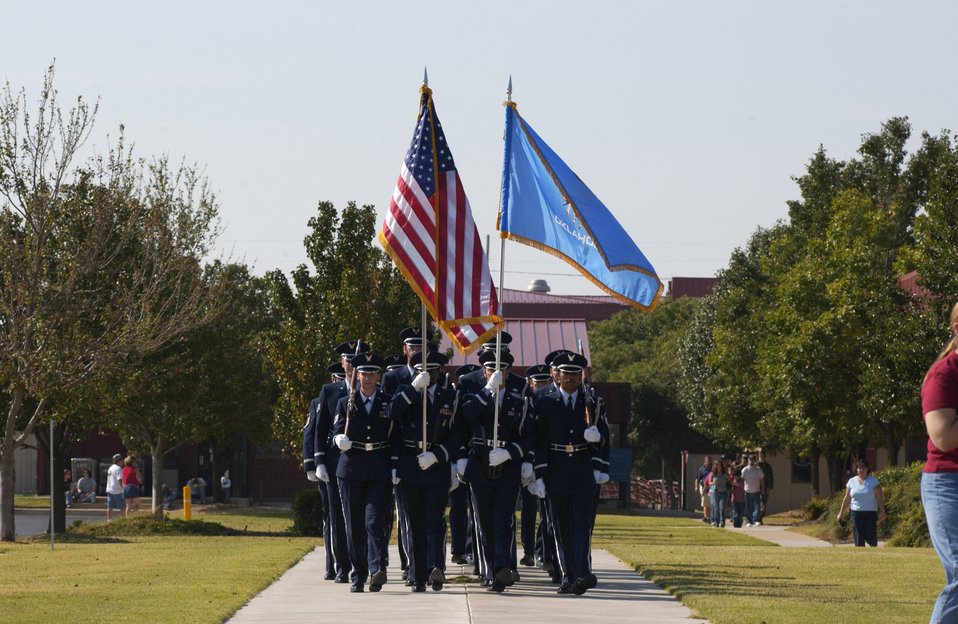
September 11

TULSA AIR NATIONAL GUARD BASE, Okla. -- Airmen prepare to post the colors during a 9-11 commemoration ceremony here Sept. 11. The Airmen are assigned to the Tulsa Air National Guard's 138th Fighter Wing.